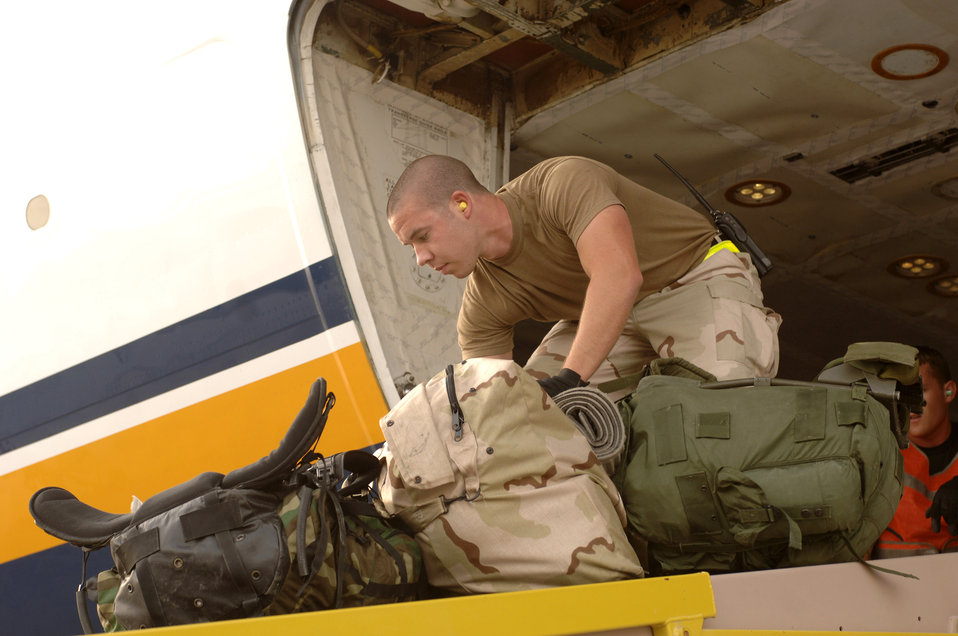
Aerial port hub keeps passengers, cargo rolling

Airman 1st Class Mark Hedge unloads baggage from a commercial aircraft. Airmen from the 8th Expeditionary Air Mobility Squadron processed nearly 257,000 servicemembers, coalition partners and federal contractors for travel in 2006. Airman Hedges is an air transportation specialist with the 8th AEMS.